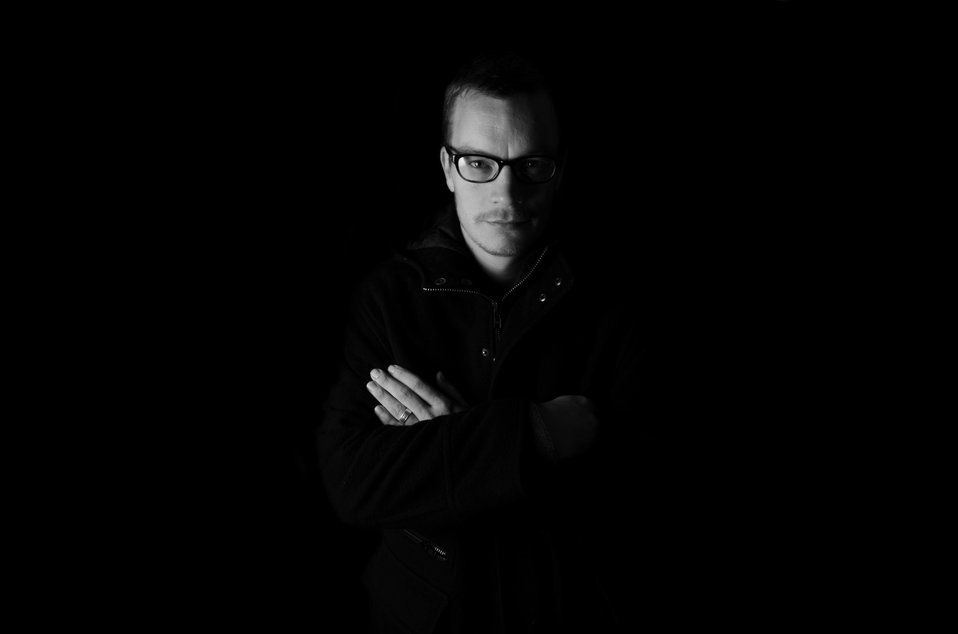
Man and glasses on the black background.